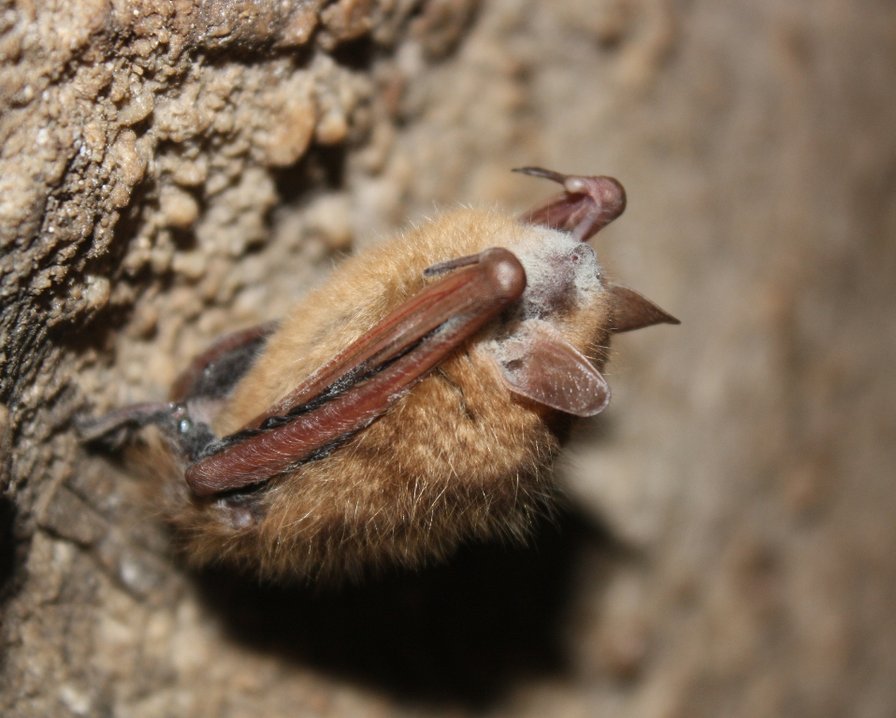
tri-colored bat with WNS